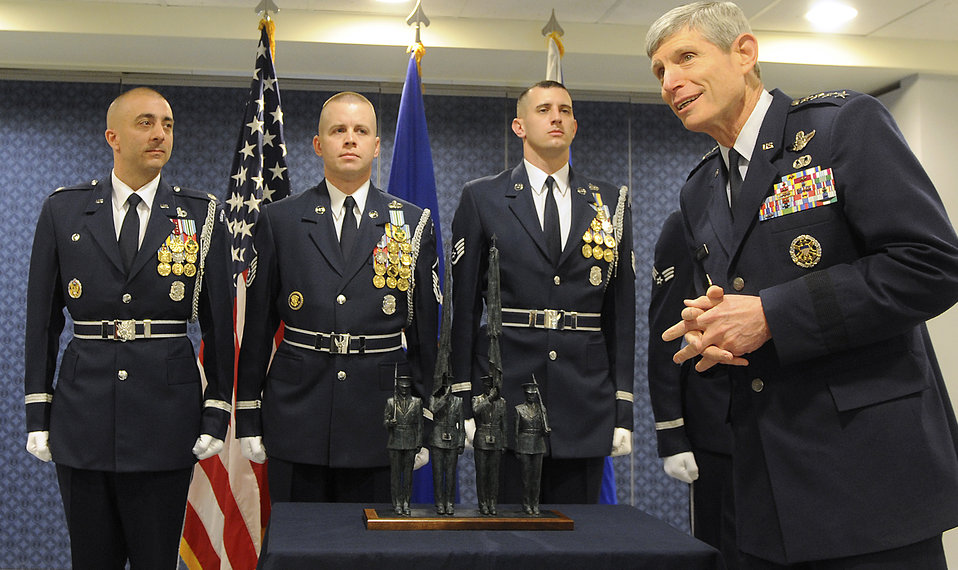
CSAF accepts honor guard statue

Air Force Chief of Staff Gen. Norton Schwartz speaks after accepting a U.S. Air Force Honor Guard statuette from the Air Force Association during a Pentagon ceremony in Washington, D.C., on April 13, 2012. The statuette is a replica of the U.S. Air Force Honor Guard sculpture at the Air Force Memorial. Standing at attention behind Schwartz are, from left, Lt. Col. Ken Marentette, Master Sgt. Matthew Lewis and Staff Sgt. Jesse Schierloh, all members of the U.S. Air Force Honor Guard at Joint Base Anacostia-Bolling, D.C.